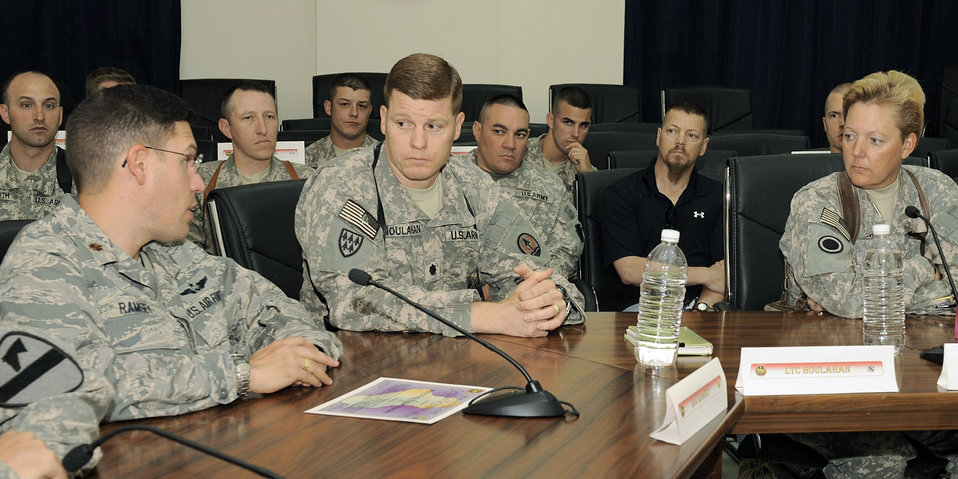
Joint airspace conference takes place in Iraq

Maj. Richard Ramsey (left to right) discusses with Army Lt. Col. James Houlahan and Army Brig. Gen. Heidi V. Brown about an Air Force program already in use in Afghanistan that could work here at the Multinational Corps-Iraq Joint Operations Center May 31 at Camp Victory, Iraq. Key players from the Army, Air Force and civilians from all over Iraq and the Combined Air Operations Center discussed the complexities of managing the joint air picture and how to improve joint tactics, techniques and procedures. Major Ramsey is a joint interface control officer at the Combined Air Operations Center deployed from Hill Air Force Base, Utah. He is a native of Joliet, Ill. Colonel Houlahan is the Multinational Corps-Iraq air missile defense cell chief and General Brown is the MNC-I deputy commander. They are deployed from Fort Lewis, Wash.